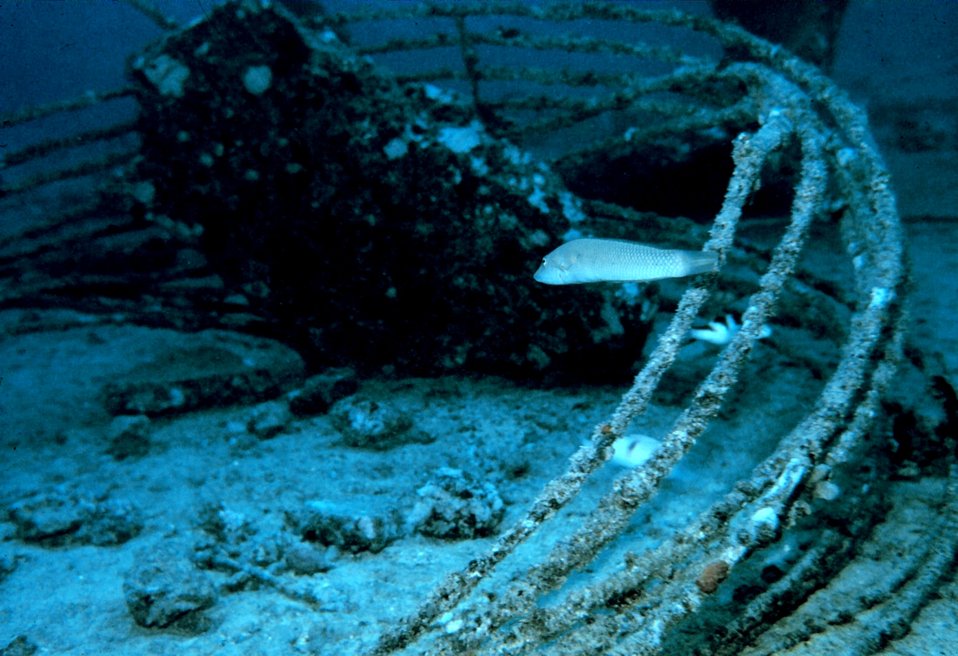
Wrasse - Cheilio inermis.